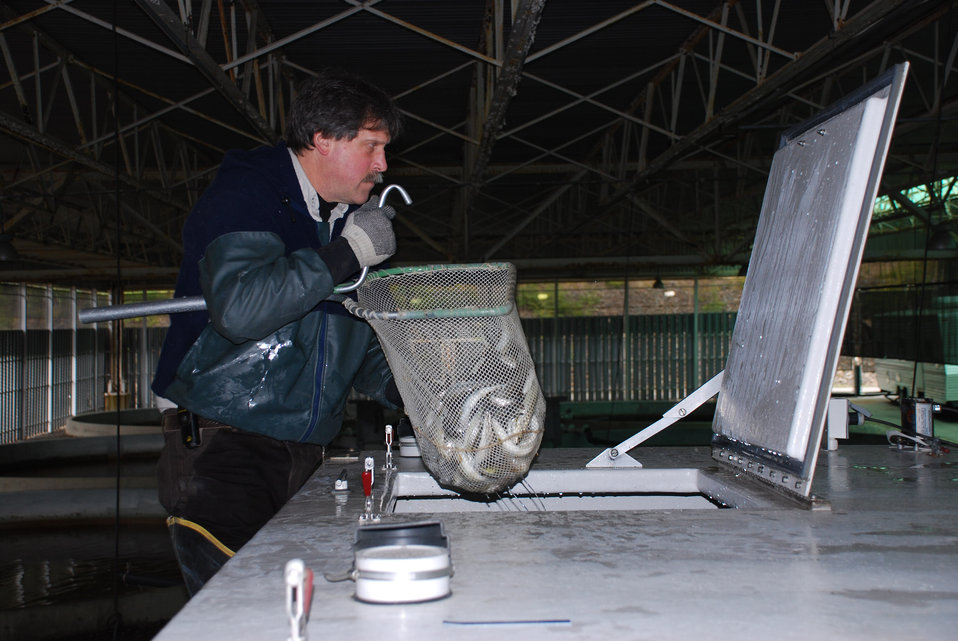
Fred Trasko with Net

Biologist and Assistant Manager Fred Trasko loads a netfull of Atlantic salmon into a distribution truck in preparation for the trip to Pleasant River.